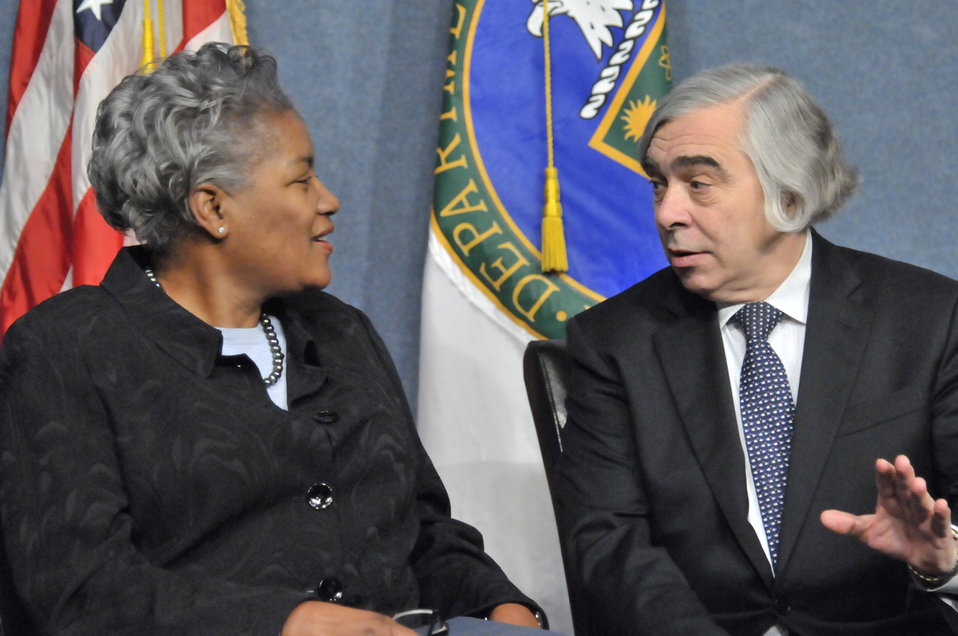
Department of energy -martin luther king / Black history month commemorative program with doe secretary e. Moniz in attendance